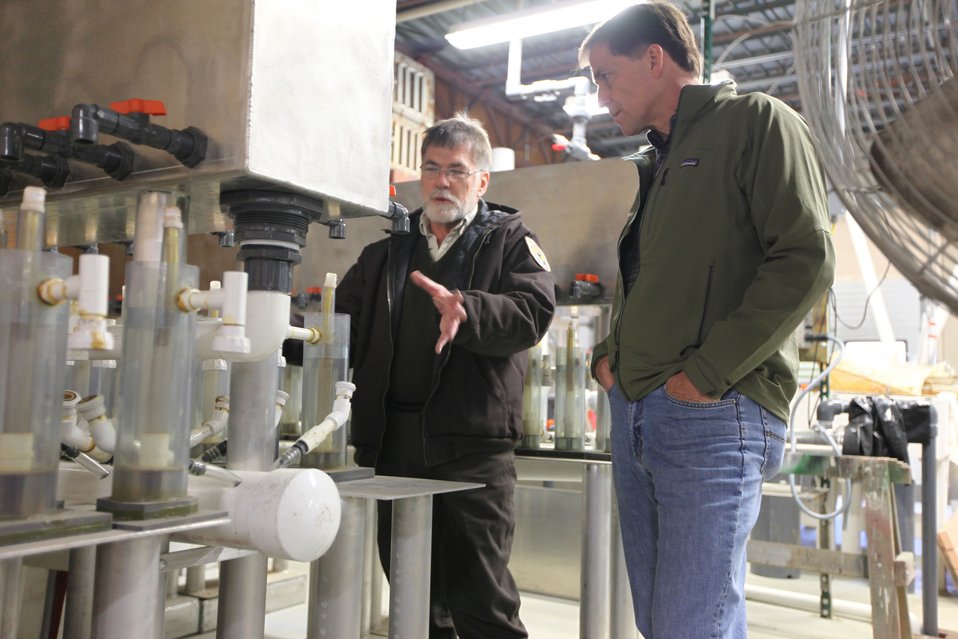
Project Leader Ken Gillette shows Dan around

U.S. Fish & Wildlife Service Director Dan Ashe visits the Northeast Region
for a tour of the White River National Fish Hatchery in Bethel, Vermont on
April 27, 2012. The hatchery was devastated by Tropical Storm Irene and
Dan Ashe had the chance to meet and thank the staff for their heroic work.
Director Ashe also visited restoration/flood response/fish passage project
sites in Rochester, Vermont and met with local officials and staff from the
White River Partnership.